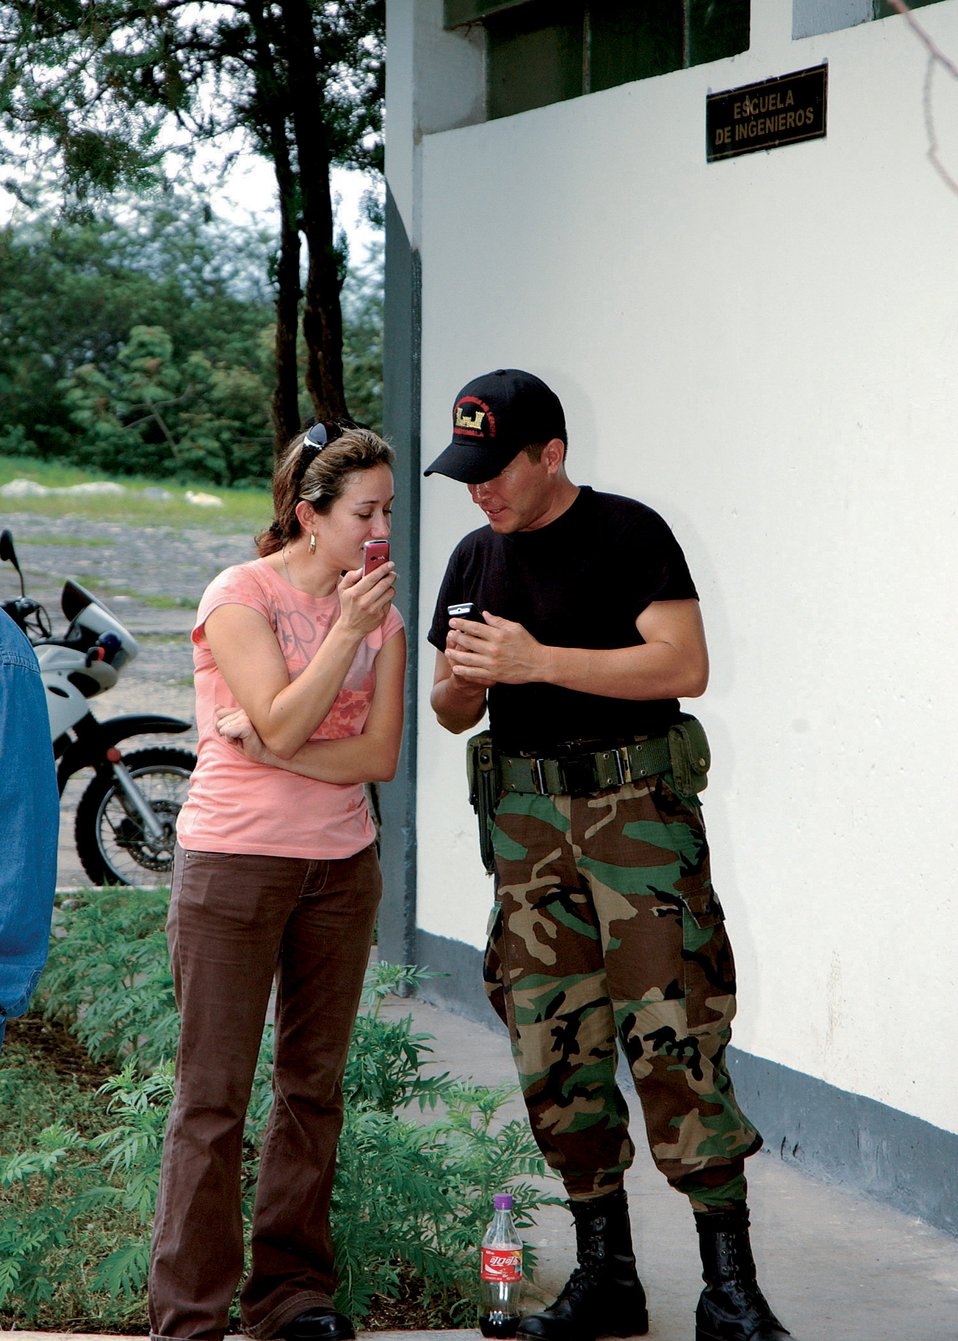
Exercise gives Guardsman a new perspective

Tech. Sgt. Shirley Morales, in Santa Rosa, Guatemala, for a medical exercise, reminisces with a childhood friend who is now in the Guatemalan Army. Sergeant Morales, who was born and raised in Santa Rosa, accompanied the 163d Medical Group during a recent medical readiness training exercise to assist with translating for the team. Sergeant Morales is a force development technician with the 163rd Reconnaissance Wing.